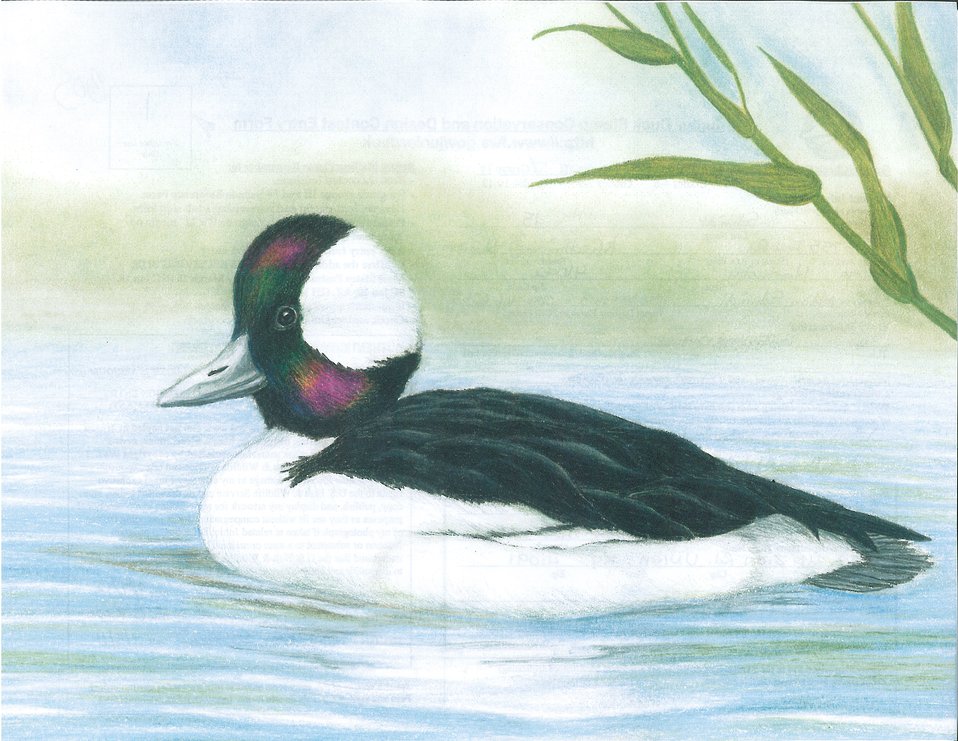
Kentucky

2012 Jr Duck Stamp Program
State Best of Show
Kentucky